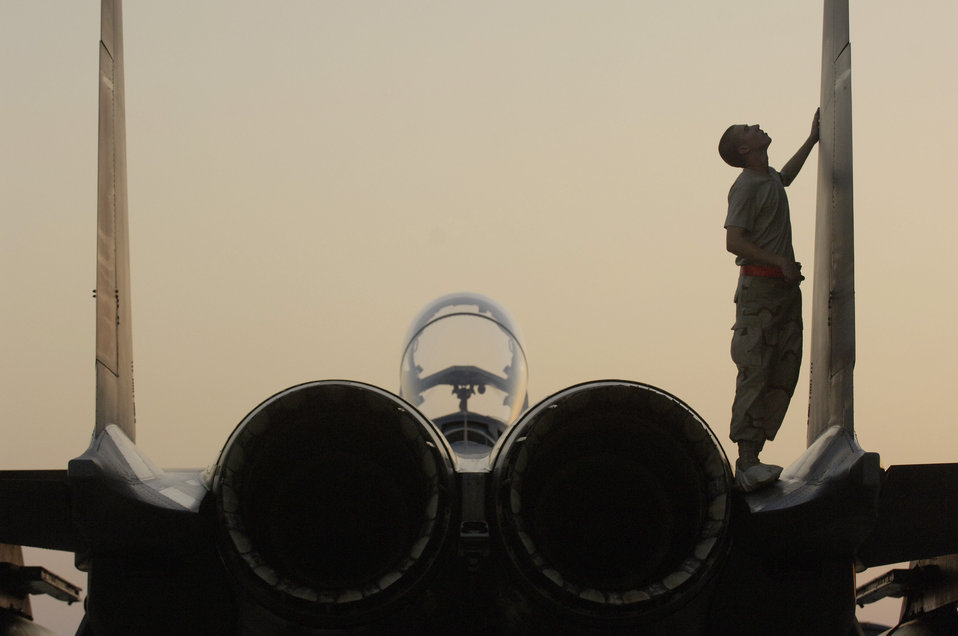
Strike Eagles have landed

Airman 1st Class Kevin Romer performs a post-flight inspection an F-15E Strike Eagle at a forward-deployed base in Southwest Asia Sept. 21. Airman Romer is an F-15E crew chief assigned to the 494th Aircraft Maintenance Unit.